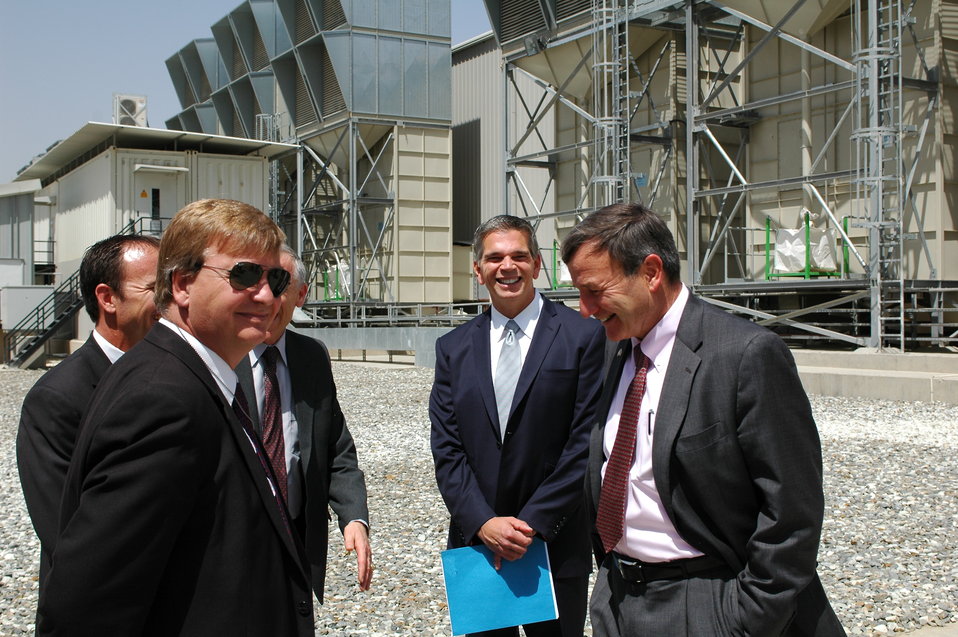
105 MW Tarakhil Power Plant Handover